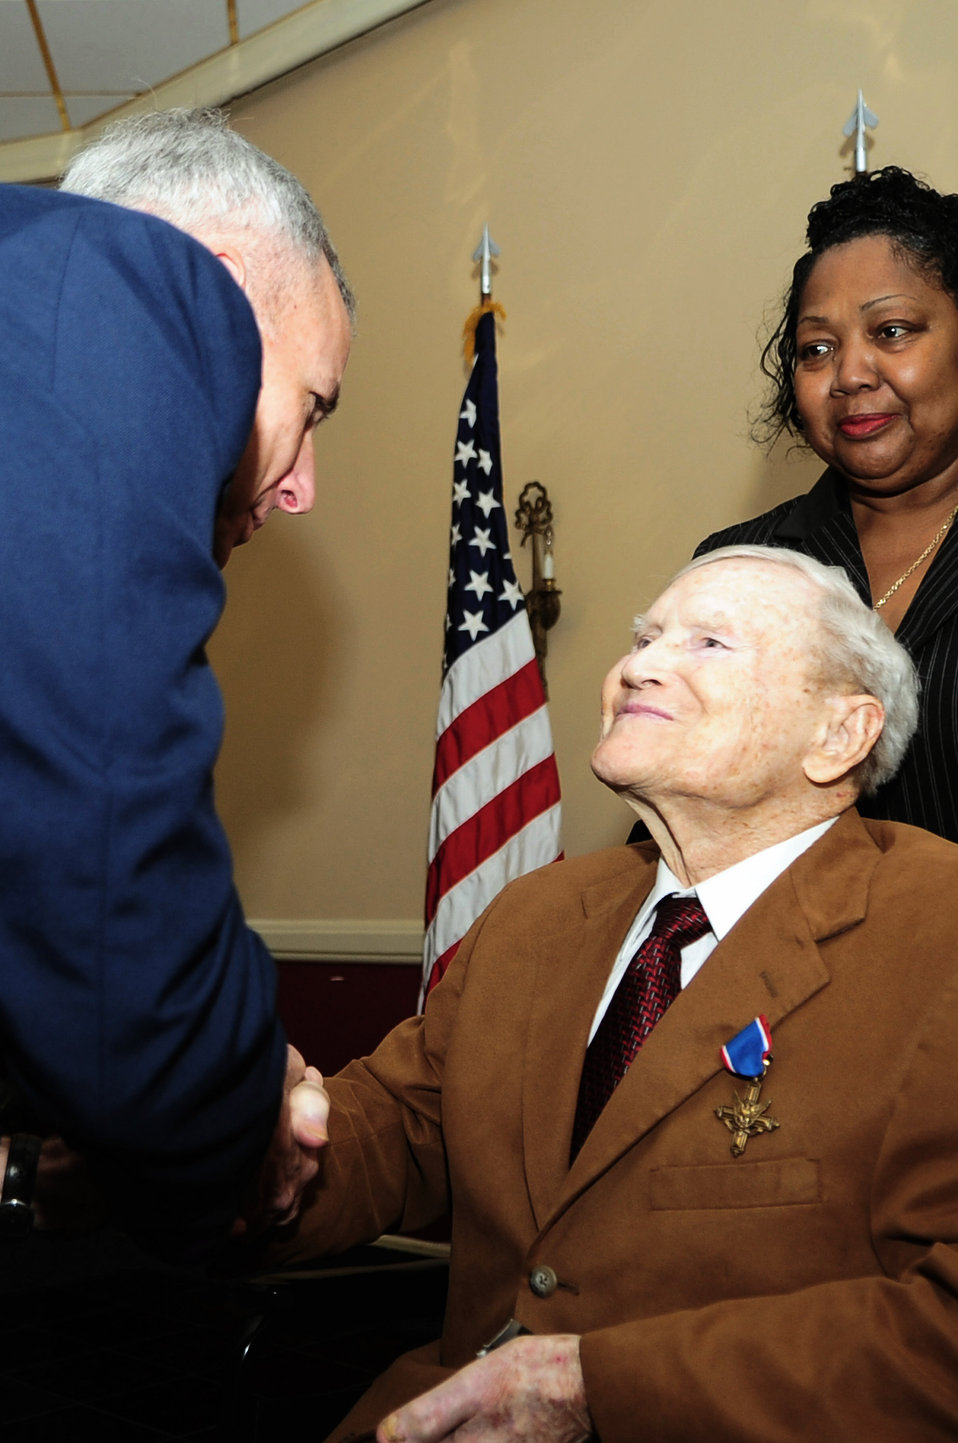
Veteran receives Distinguished Service Cross

Maj. Gen. Floyd Carpenter, vice commander of 8th Air Force, shakes the hand of Walter T. Holmes Feb. 2 after presenting him with the second-highest military award, the Distinguished Service Cross. The award is being presented 65 years after Mr. Holmes and his fellow B-24 pilots performed low-level bombing missions over the Ploesti oil refineries in Rumania during World War II.